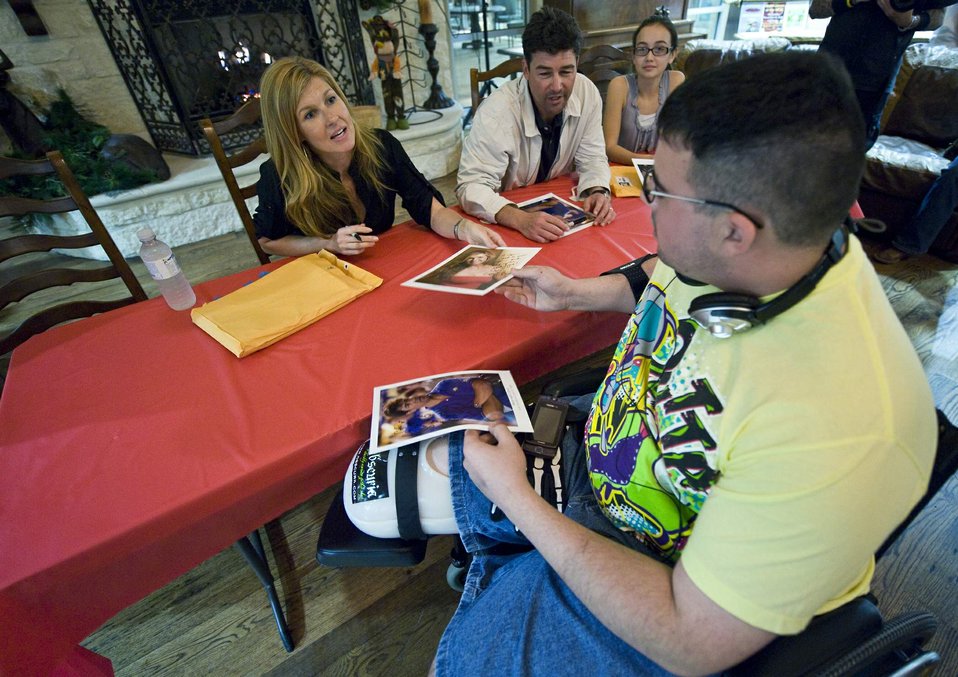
'Friday Night Lights' actors thank wounded warriors